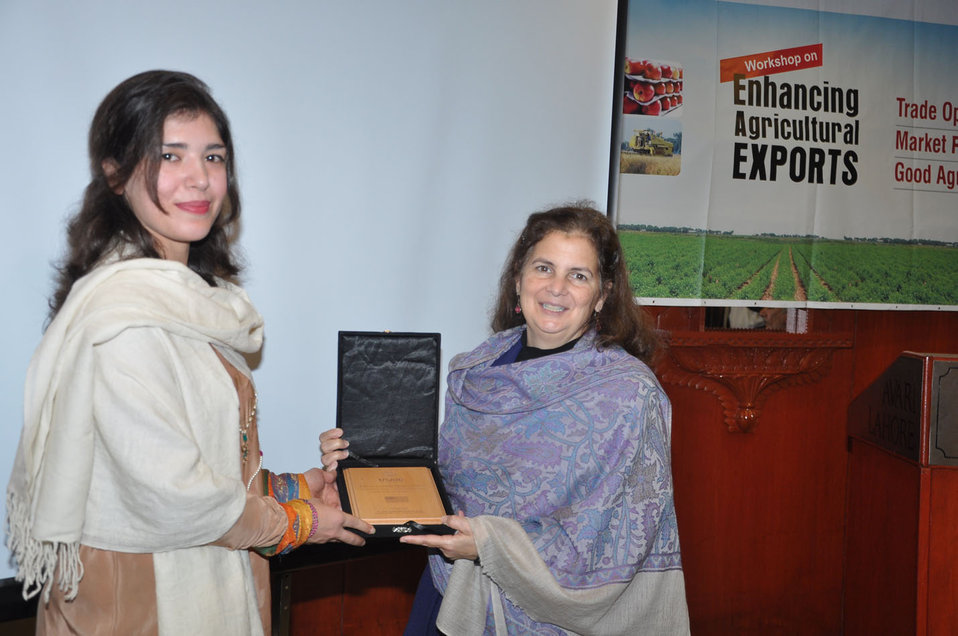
Ms. Hussan Bano Burki, Deputy Chief of Party USAID Trade Project presenting memento to Ms. Nina Fite, U.S. Consul General, Lahore.